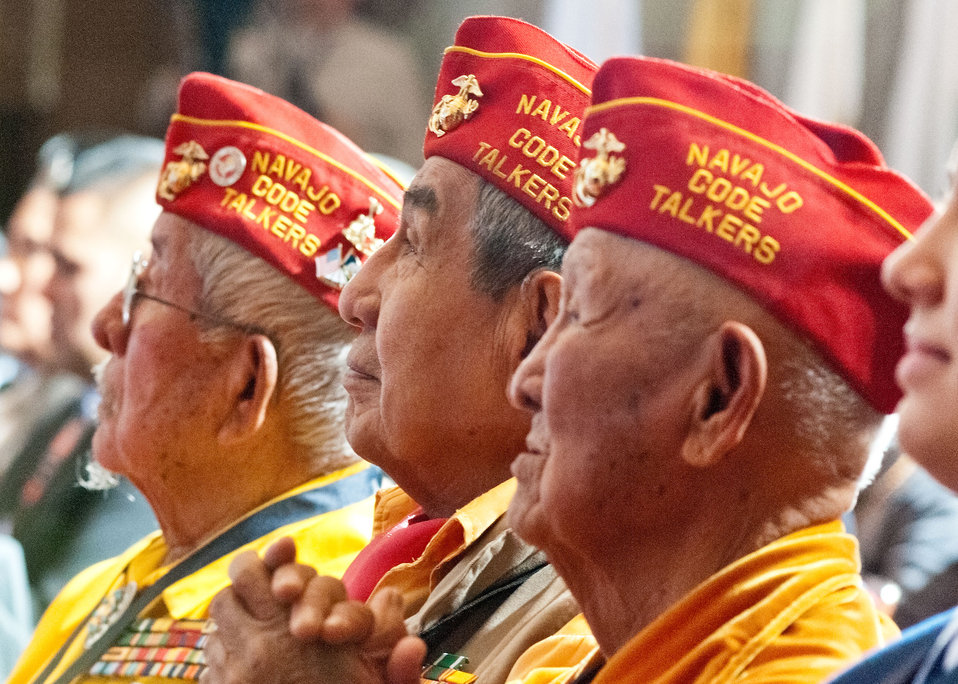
Navajo Code Talker veterans attended the 2012 Fourth Annual White House Tribal Nations Conference at the U.S. Department of Interior in Washington D.C. on Wednesday, Dec. 5, 2012. Navajo Code Talkers were members of the U.S. Armed Forces who sent coded messages in the Navajo language during World War II that confused the enemy and prevented interception of the messages. Cabinet members Interior Secretary Ken Salazar, Agriculture Secretary Tom Vilsack, Education Secretary Arne Duncan, Treasury Deputy Secretary Neal Wolin, Commerce Acting Secretary Rebecca Blank, Health and Human Services Secretary Kathleen Sebelius discussed the gains and progress of the Obama Administration concerning Native American Tribal Nations.